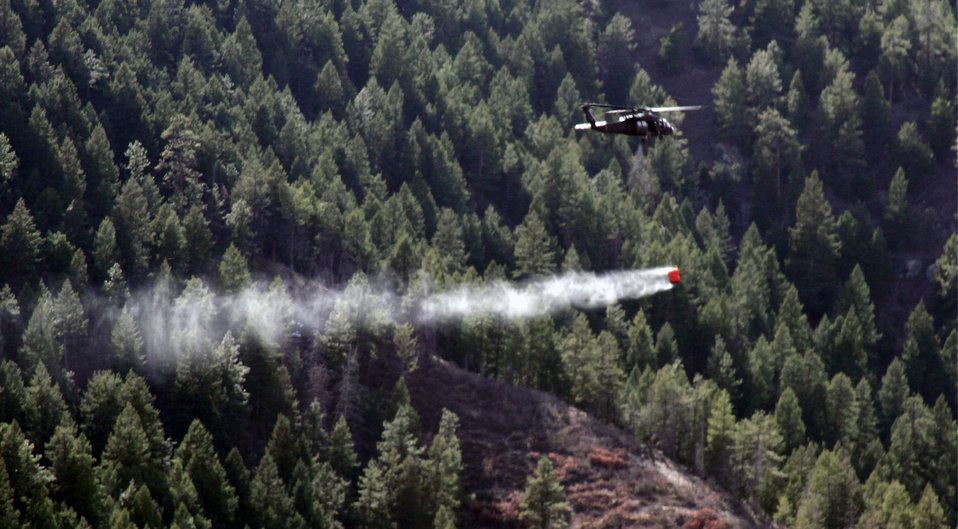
Wildfire support

National Guard troops from five states help battle wildfires in Colorado and New Mexico.